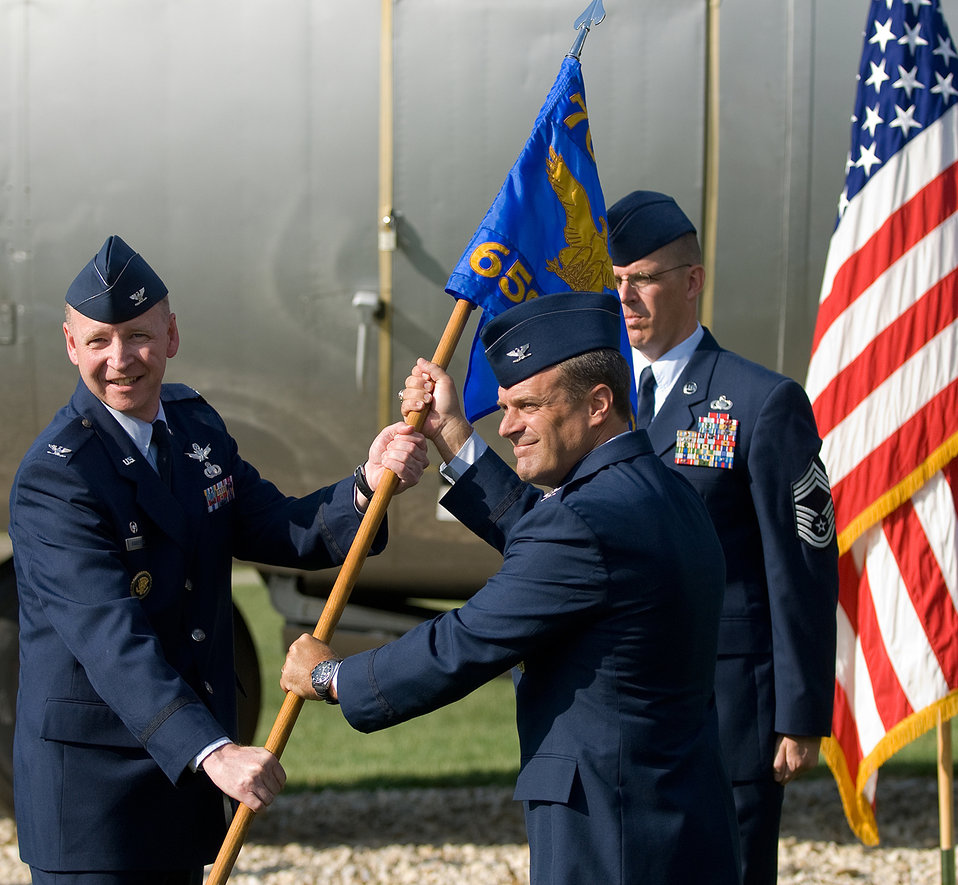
Col. John Bansemer (left) passes the guidon of the just-activated 659th Intelligence, Surveillance and Reconnaissance Group to it first commander, Col. Peter Lambert, Sept. 8, 2010, during a ceremony at Fort George G. Meade, Md. The 659th ISR Group will provide ISR support to 24th Air Force and falls under command of the Air Force ISR Agency's 70th ISR Wing.